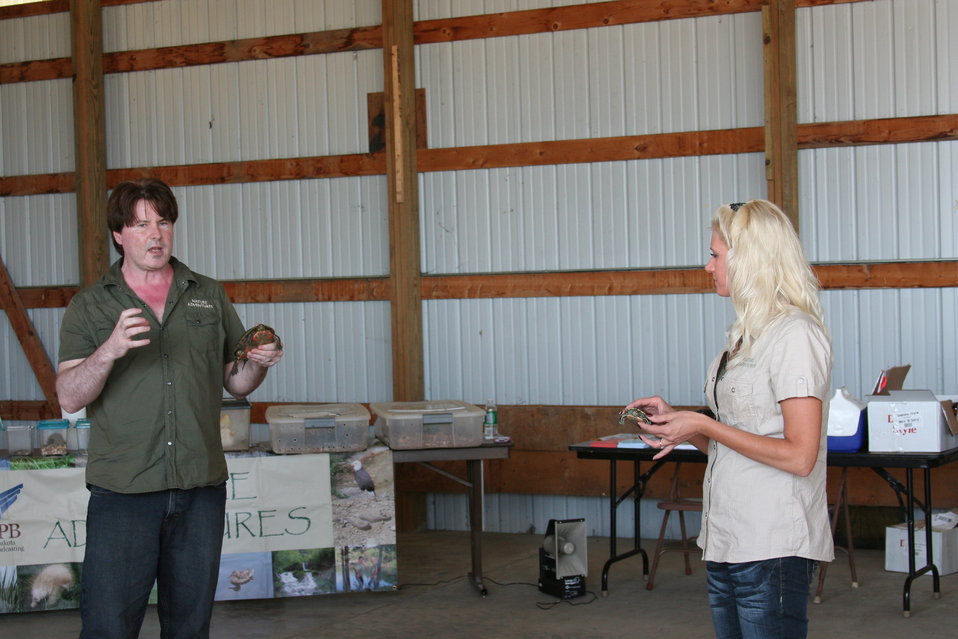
2011 Huron Prairie Fest